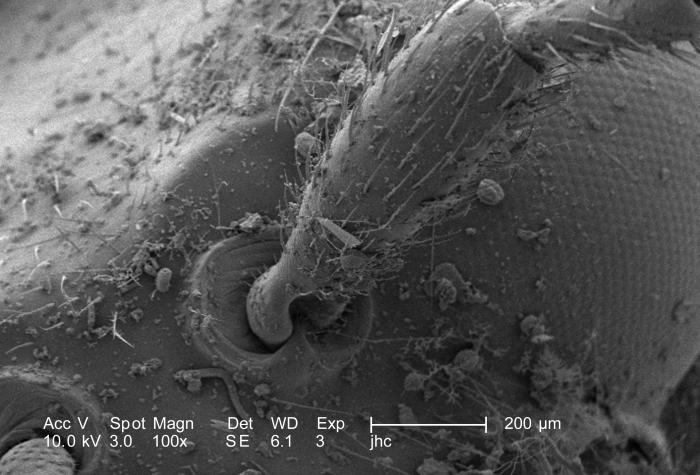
Revealed using a scanning electron microscope (SEM), at a magnification of 100X, were the exoskeletal ultrastructural characteristics of this unidentified debris-laden insect, which had been discovered deceased in the suburbs of Decatur, Georgia. Depicted in this particular image was a section of the insect's head region where the organism's two antennae could be seen emanating from its forehead.Note the sensorial 'setae' that adorned the exoskeletal surface, which acted as sensorial structures that provided the insect with information about its ever-changing environment such as fluctuations in temperature, wind direction, and chemical queues.